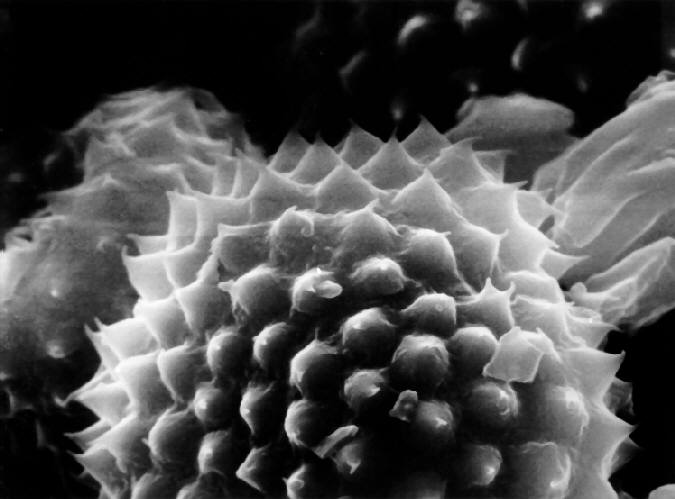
Scanning Electron Micrograph of Ambrosia psilostachya